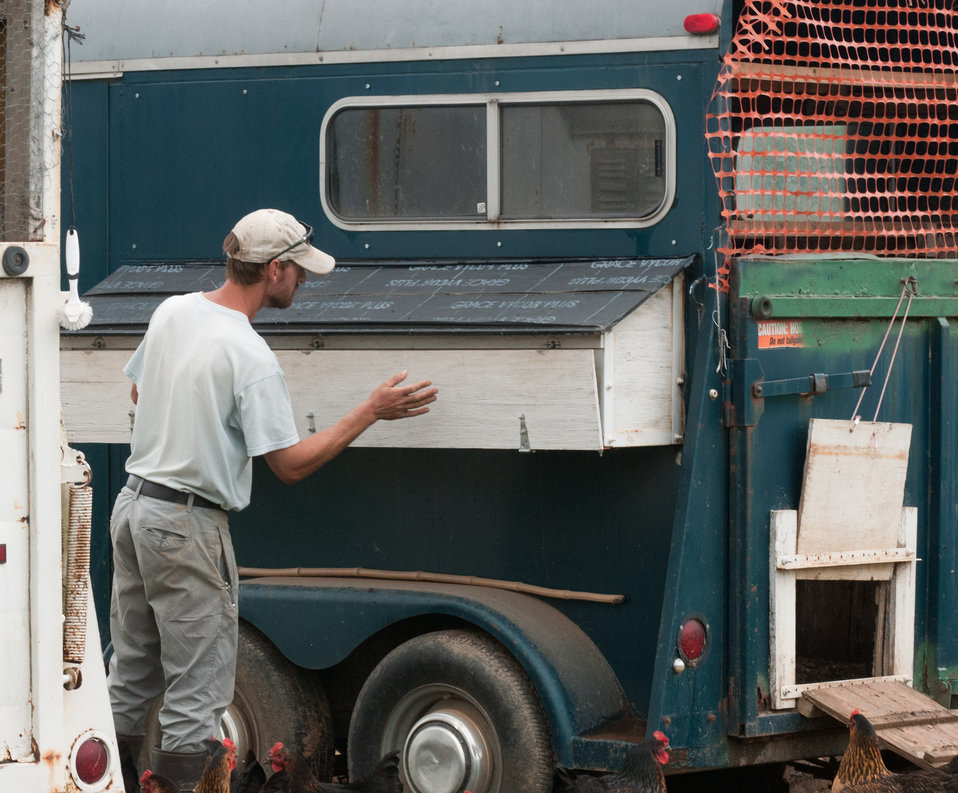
Farm assistant George Kloph opens the cabinet that chickens enter from the inside to lay their eggs; he is checking the health and safety of laying hens at Nick’s Organic Farm, in Adamstown, MD, on Friday, July 12, 2013. The fence helps keep predators away from the chickens. Discarded horse trailers have been repurposed as coops with nests on the side that allow for easy egg harvesting. The farm, owned by Nick Maravell, produces Black Angus beef, chicken, turkey, eggs, hay, soybeans, corn, alfalfa, orchard grass, rye; and other crops. The cattle are100% grass-fed receiving certified organic pasture, certified organic hay (in winter), water and mineral salts mixed with sea kelp. The cattle are not fed hormones, antibiotics or animal products. Poultry feed from grain is ground from organic grain. The poultry also graze on organic pastures. The farm has conducted on-farm research with federal, state and non-profit agencies to refine organic practices. An organization such as the U.S. Department of Agriculture (USDA) Agricultural Research Service (ARS) center in Beltsville has been able to conduct research to improve organic crops and to breed and manage the cattle so that they have.